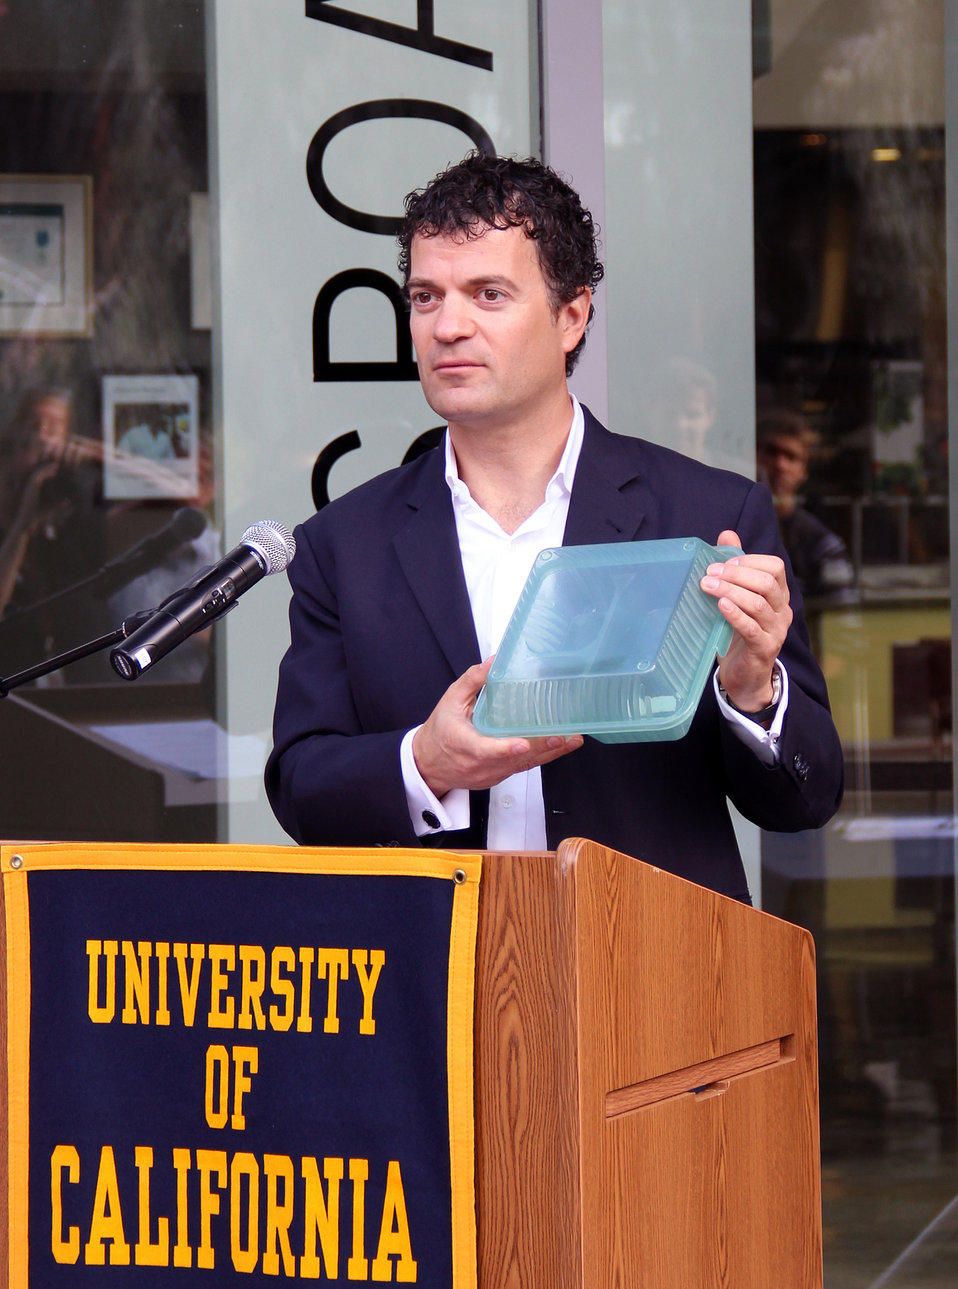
November 15, 2012, 18 Pacific-Southwest Universities Join Food Recovery Challenge

At the University of California at Berkeley, EPA announced 18 universities that have joined the Food Recovery Challenge in celebration of America Recycles Day. Jared Blumenfeld, U.S. EPA Pacific Southwest Regional Administrator, holds up the new reusable to-go containers available in U.C. Berkeley dining halls.

Like many of us, busy students often take their meals to go. Students can now bring in a reusable box to help prevent 'to-go waste'.

Check out EPA's Food Recovery Challenge

Tips for greener choices at www.epa.gov/wastes/wycd/incommunity.htm